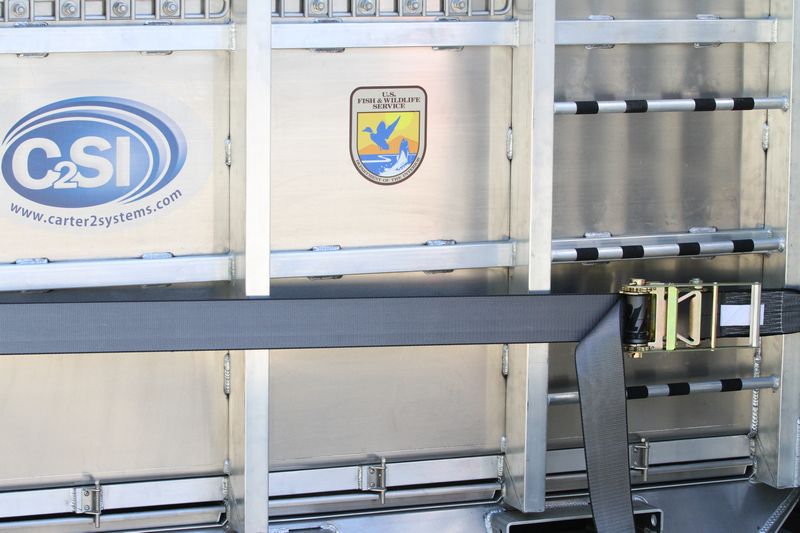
Press Conference on the polar bear holding module. USFWS/Rose Primmer